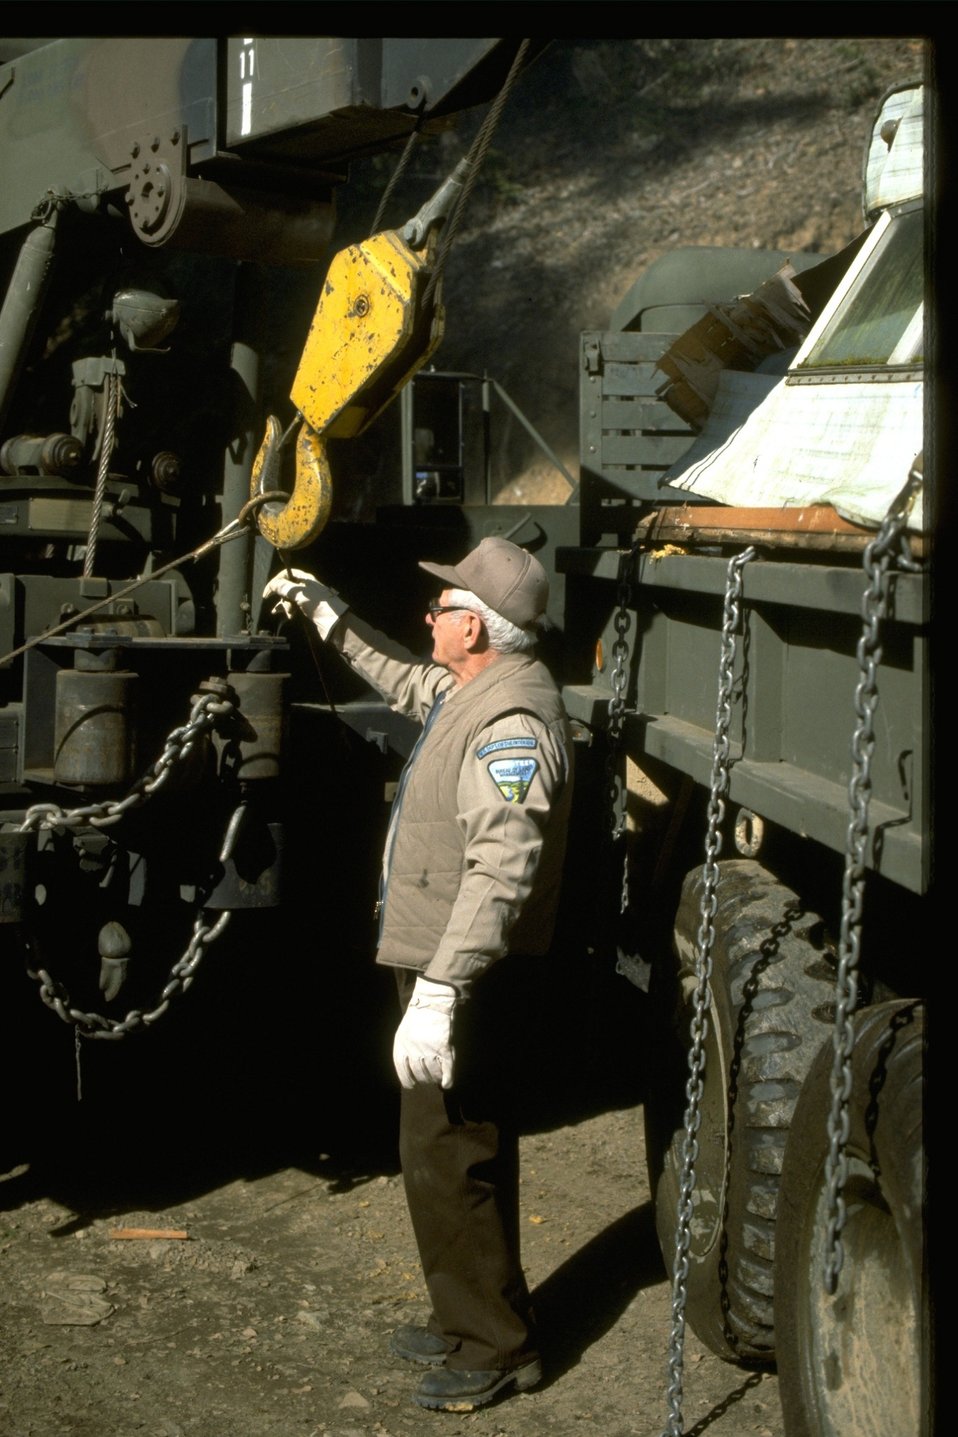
Volunteer, Ernie Smith, at rust bucket clean up site to clean up old equipment.